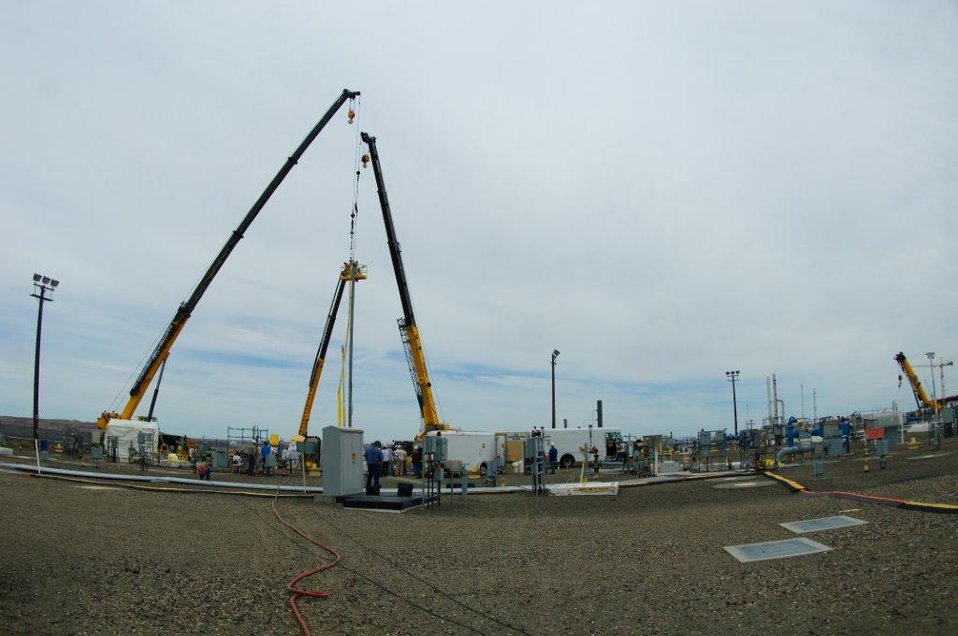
Corrosion probe installation

Two riggers use an aerial lift to install a new Recovery Act-funded corrosion probe into one of Hanford’s double-shell tanks. A corrosion probe is a 50-foot piece of pipe that contains sensors to provide a real-time measurement of tank waste chemistry and tank corrosion monitoring as an added level of protection to the environment.